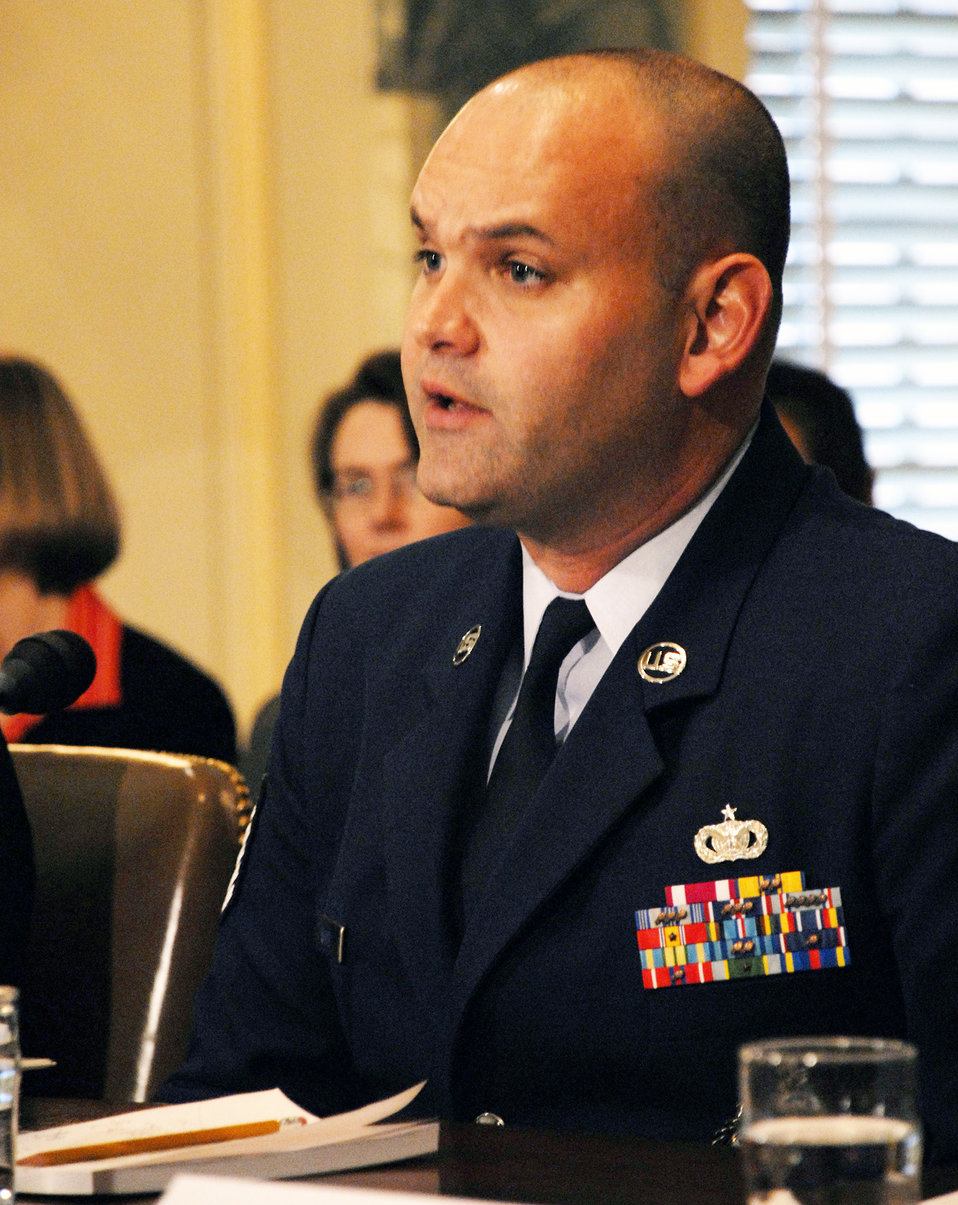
Recruiters discuss challenges with Senate subcommittee

Master Sgt. Dave White answers questions about health professional recruiting for the Senate Armed Services Committee Subcommittee on Personnel Jan. 31. He is a flight chief for the 341st Recruiting Squadron. Amid a panel that included sister service counterparts, General Suzanne Vautrinot, Air Force Recruiting Service commander, provided the senators with an update on current recruiting numbers, challenges and issues.